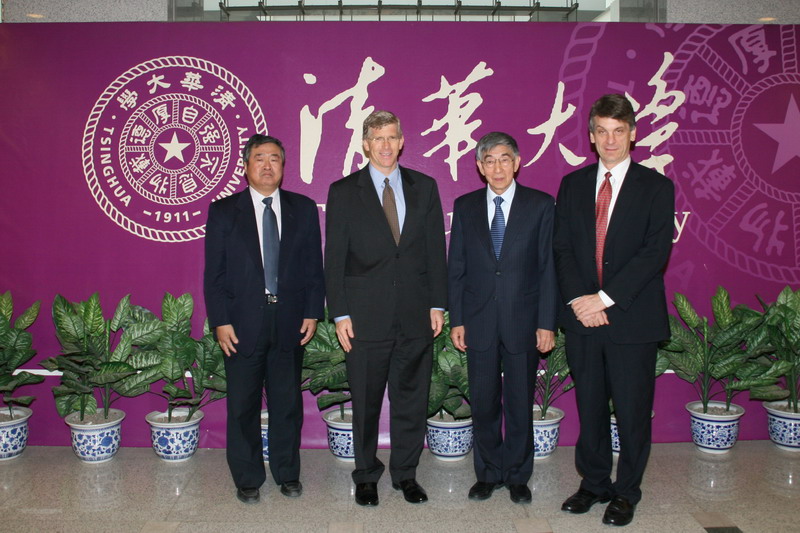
Deputy Secretary Poneman visits Tsinghua University.